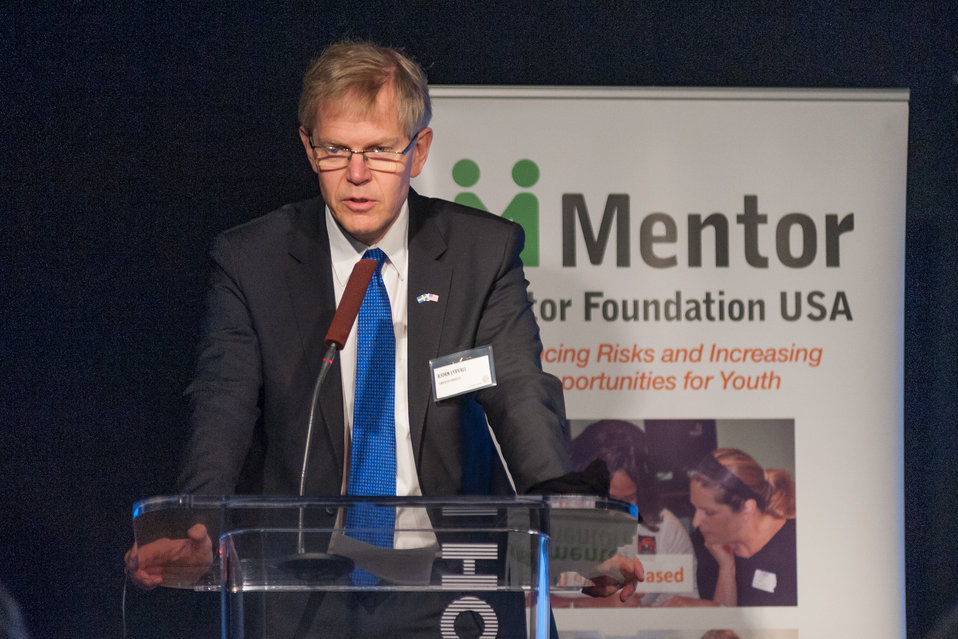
Mentor NDFW Event 2014

Mentor Foundation USA, in partnership with the National Institute on Drug Abuse (NIDA) and other key partners hosted a Youth Drug Facts Rally at the House of Sweden on Thursday, 30th January 2014. Approximately 200 students from five local high schools attended and had the opportunity to interact with top U.S. scientific experts, and inspiring guest speakers including the Swedish Ambassador, H.E. Bjorn Lyrvall to “shatter the myths” about drugs and substance abuse, while pledging to stay drug-free.